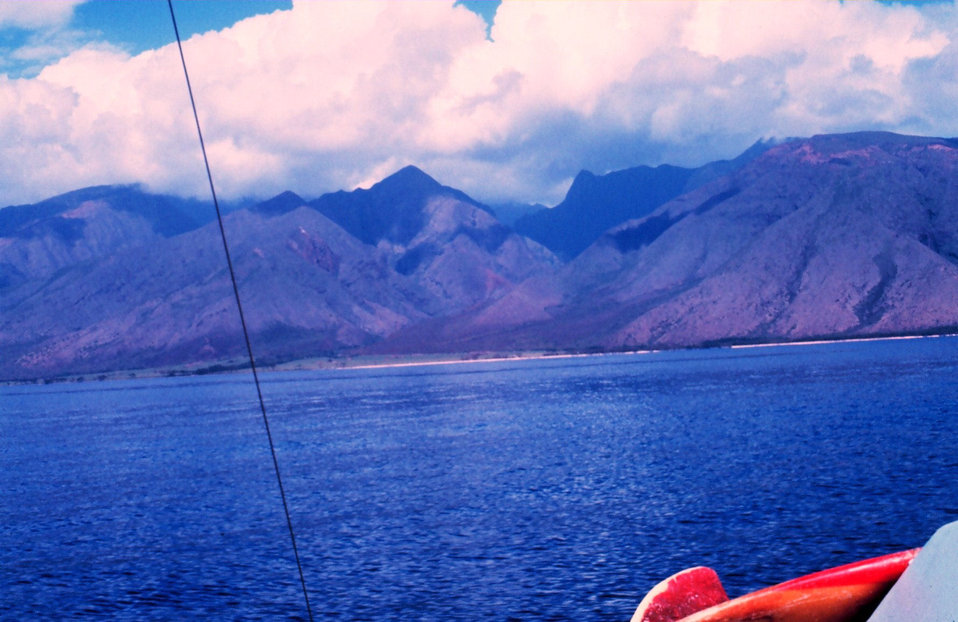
Lanai-Maui trip